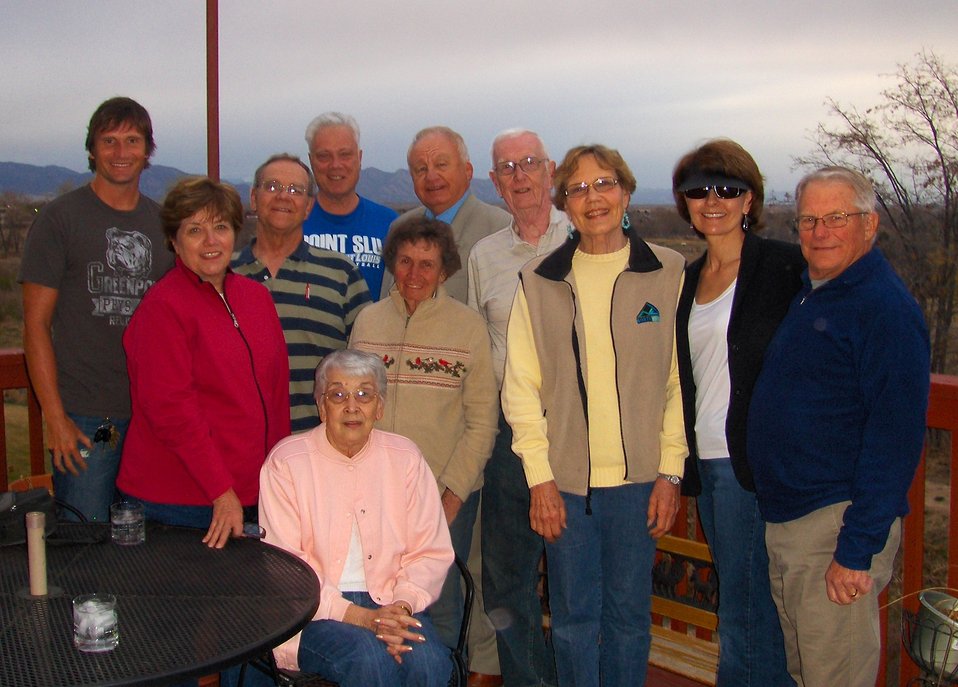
Two Ponds Foundation